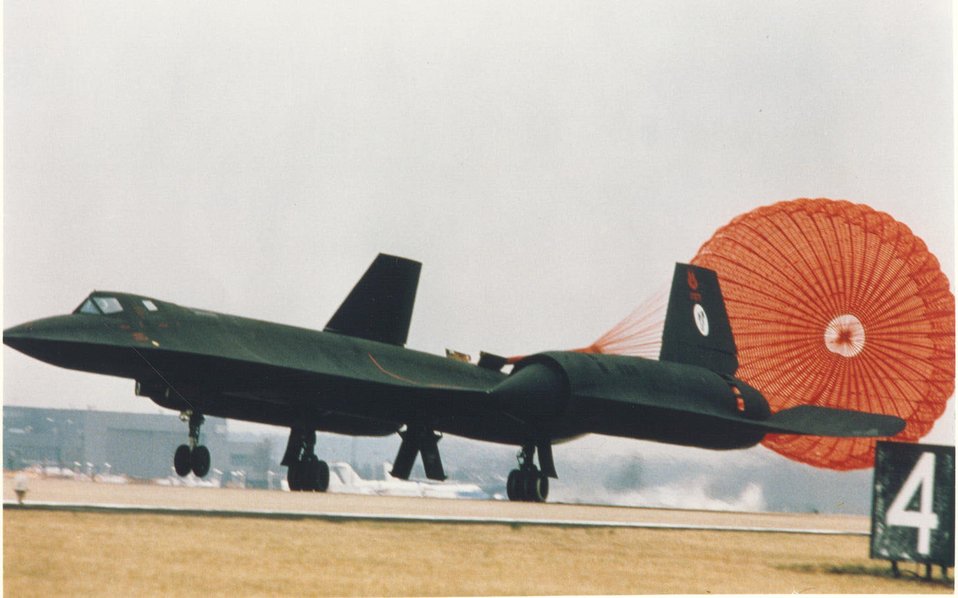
SR-71 landing

The SR-71 lands with drag chute at Beale Air Force Base, Calif.